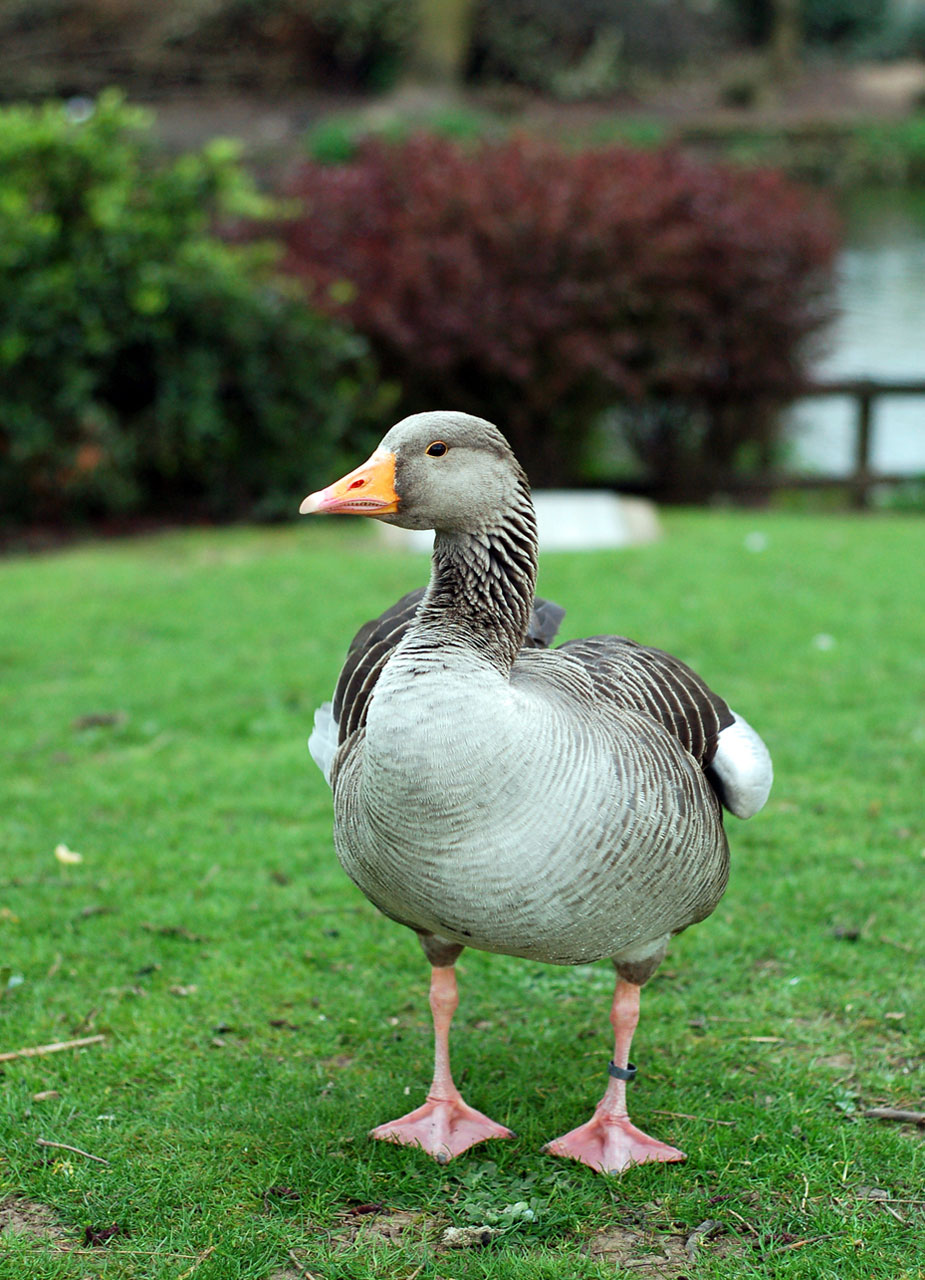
Proud goose posing in a local park.